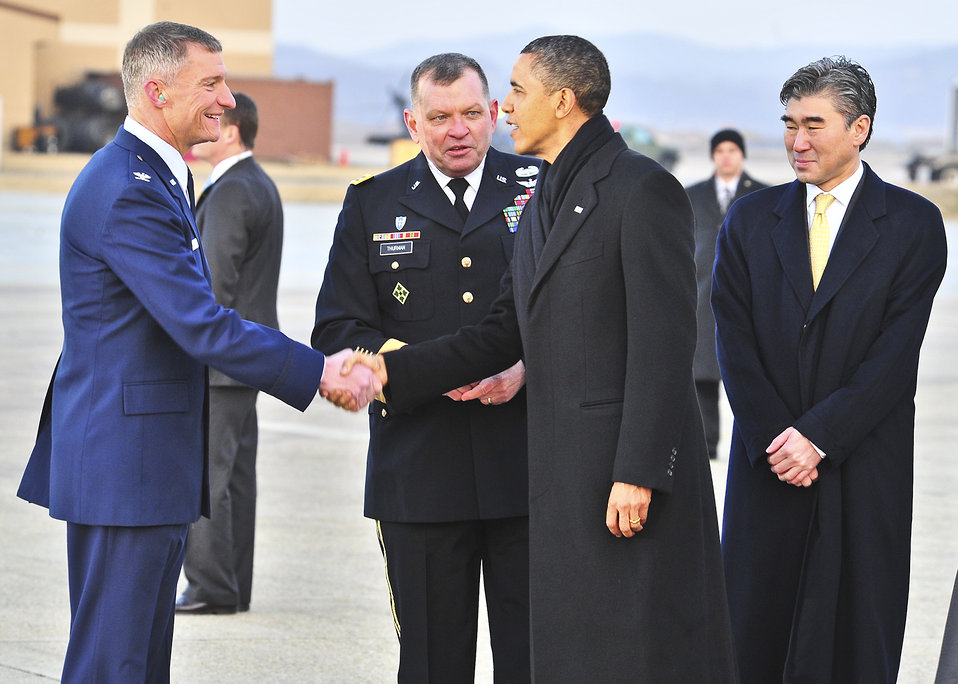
Obama visits Osan AB

Col. Patrick McKenzie, the 51st Fighter Wing commander, shakes hands with President Barack Obama at Osan Air Base, South Korea, March 25, 2012, during introductions by Gen. James Thurman, the U.S. Forces Korea commander. The president transited the base on his way to the 2012 Nuclear Security Summit in Seoul, South Korea.